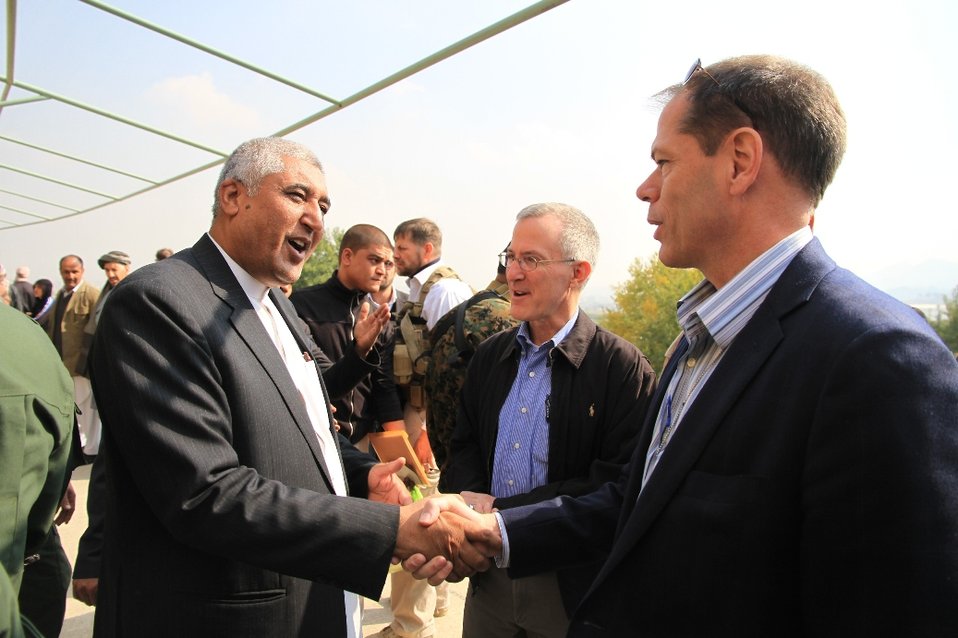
Ag.Fair, October 2013

H.E Muhammad Asif Rahim (L), Minister of Agriculture, Irrigation and Livestock shakes hand with William Hammink and Larry Sampler at Kabul International Ag.Fair, October, 2013